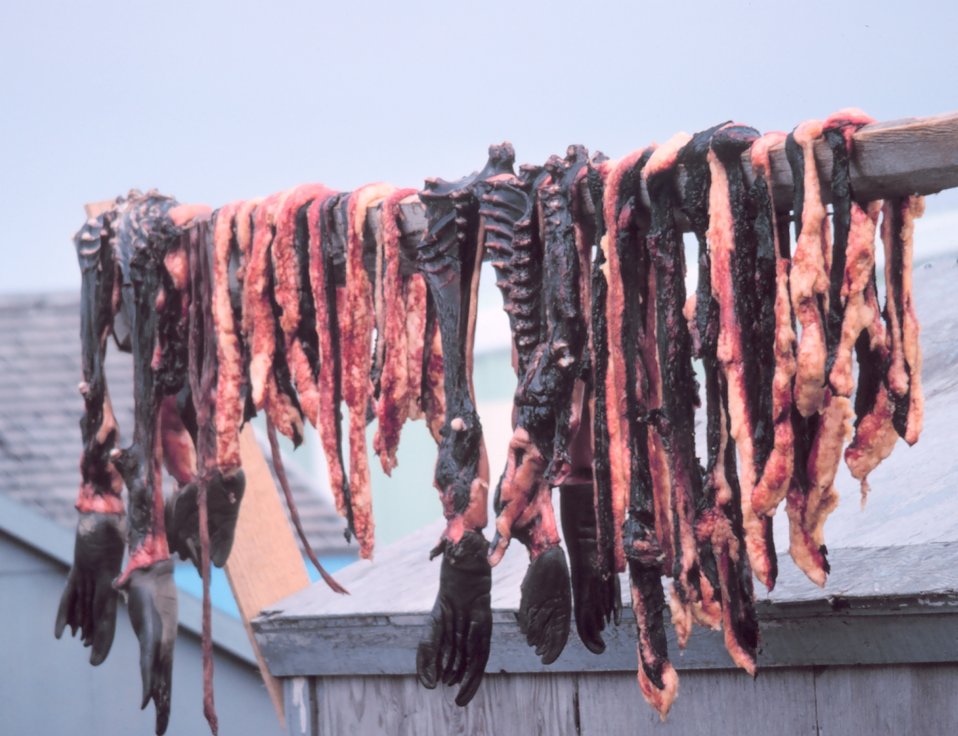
Drying seal meat.